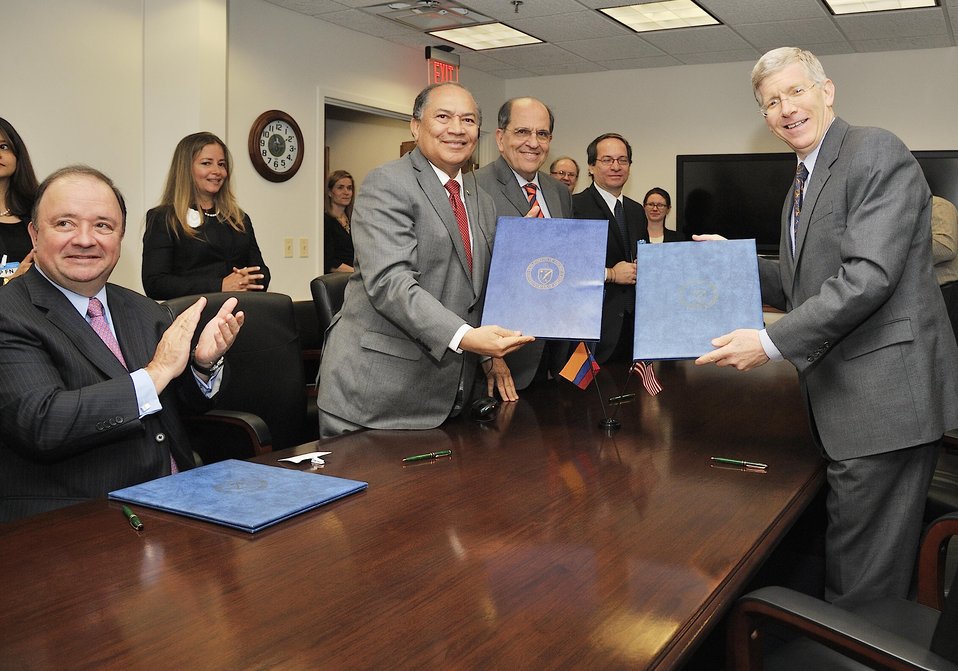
U.S. Deputy Secretary of Energy Daniel Poneman, Colombia's Minister of Energy and Mines Amylkar Acosta, Mayor of Santiago de Calí Rodrigo Guerrero, and Director of Planning of Colombia Tatyana Orozco signed a Memorandum of Understanding (MOU) to collaborate in the development of a Solar Decathlon Latin America and Caribbean competition.